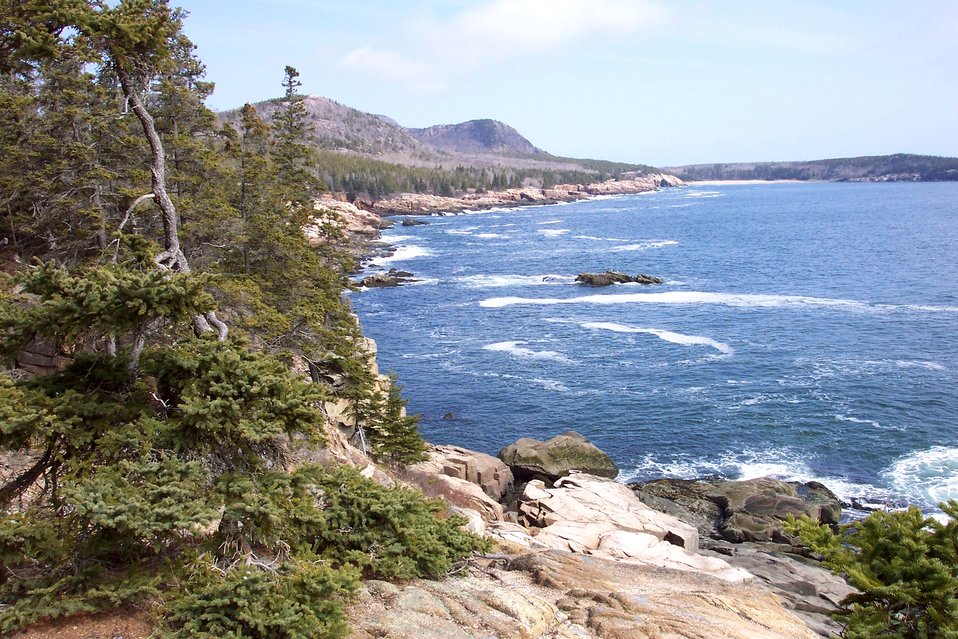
Looking north to the Sand Beach area from the Otter Cliffs.